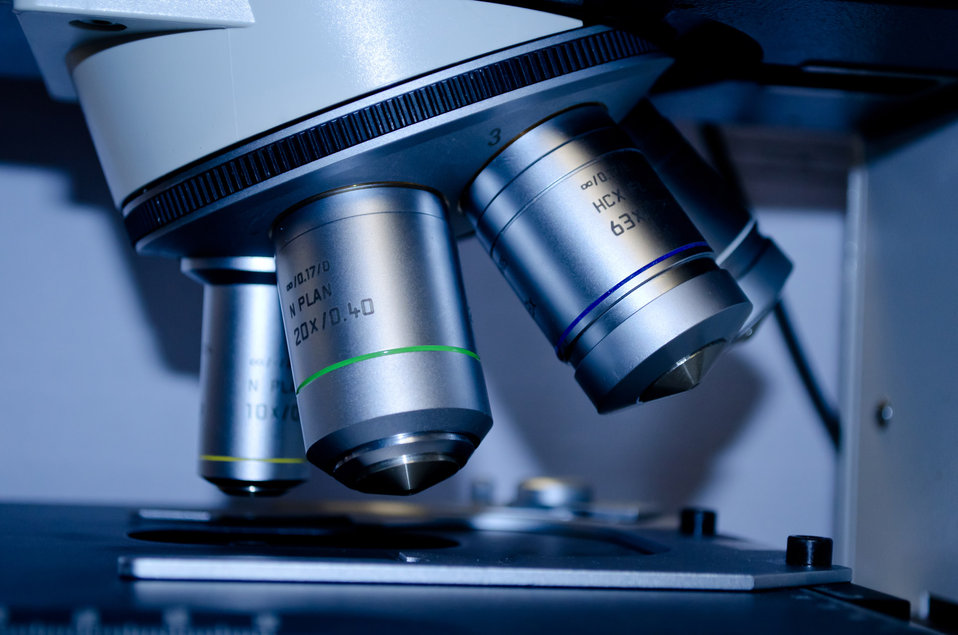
Microscope lenses.